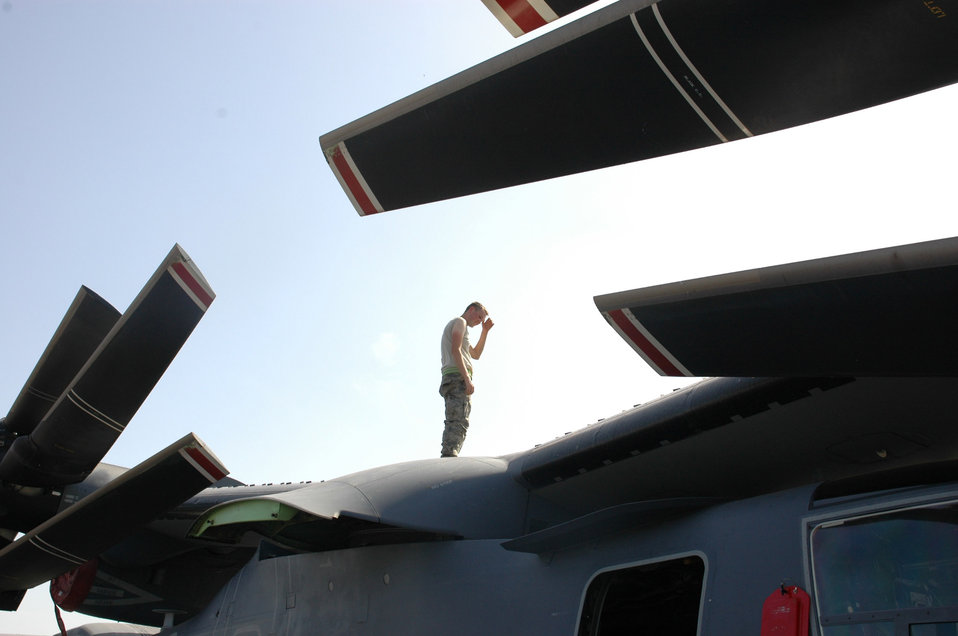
CV-22s complete first operational deployment

An Airman from the 1st Special Operations Helicopter Maintenance Squadron works atop a CV-22 Osprey under the African sun in Bamako, Mali. The CV-22s conducted their first operational deployment as part of Exercise Flintlock, a training designed build capacity among Trans-Saharan nations so that they may more effectively address issues which threaten peace, stability and security.